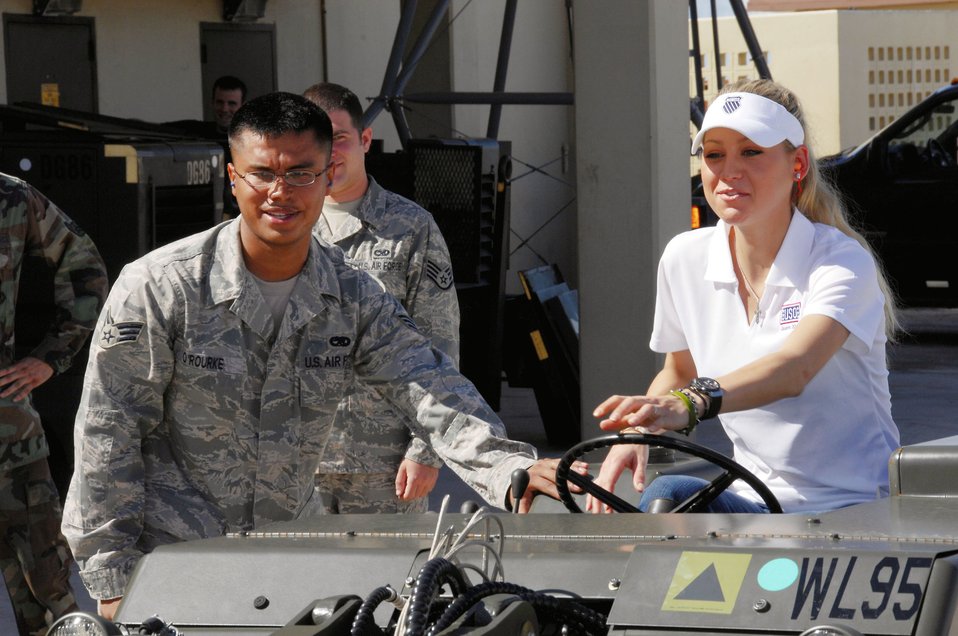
Anna Kournikova visits Andersen

Senior Airman Michael O'Rourke shows Anna Kournikova how to operate a bomblifter Oct. 29 at Andersen Air Force Base, Guam. Airman O'Rourke is assigned to the 36th Maintenance Squadron.